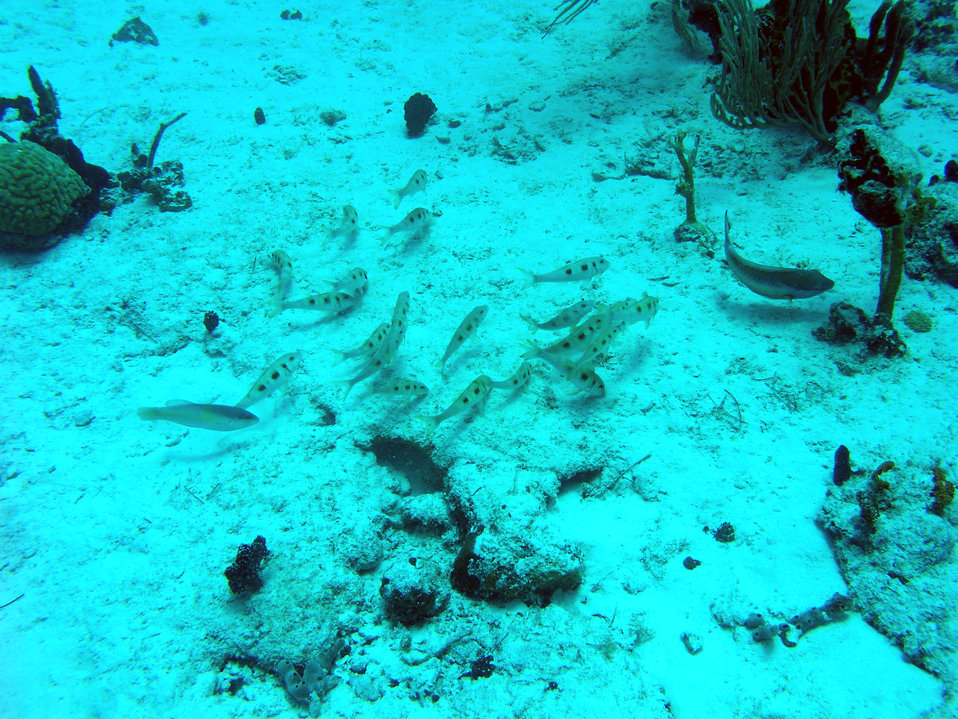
Spotted goatfish (Pseudupeneus maculatus)